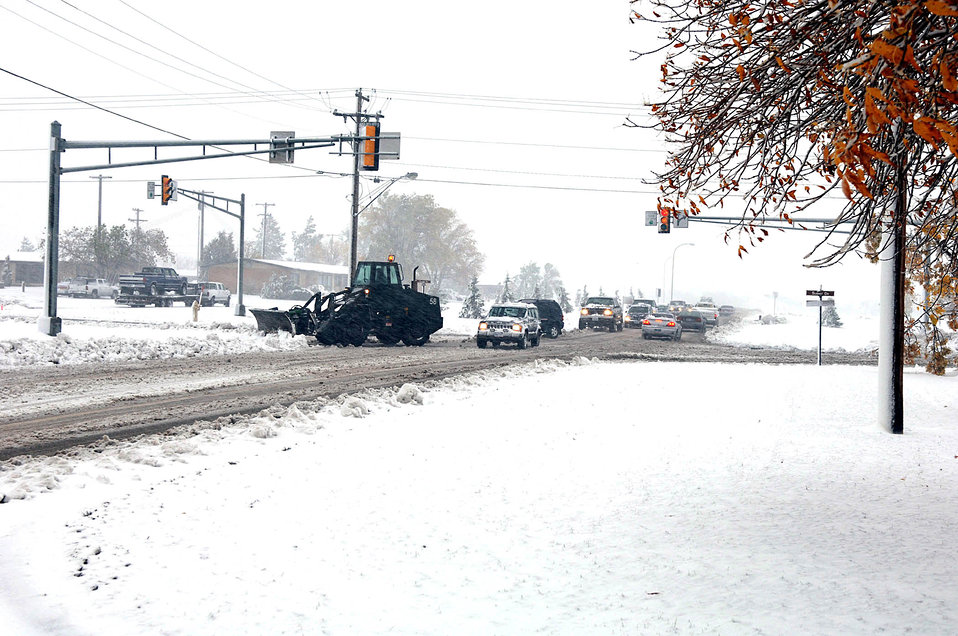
First snow

MINOT AIR FORCE BASE, N.D. -- A 5th Civil Engineer Squadron snowplow clears an intersection here after the first snowfall of the year. Only mission-essential Airmen reported to duty because of the storm. As of 11 a.m. on Oct. 5, the base had received 5 inches of snow, winds averaging 45 mph and a temperature of 32 degrees.